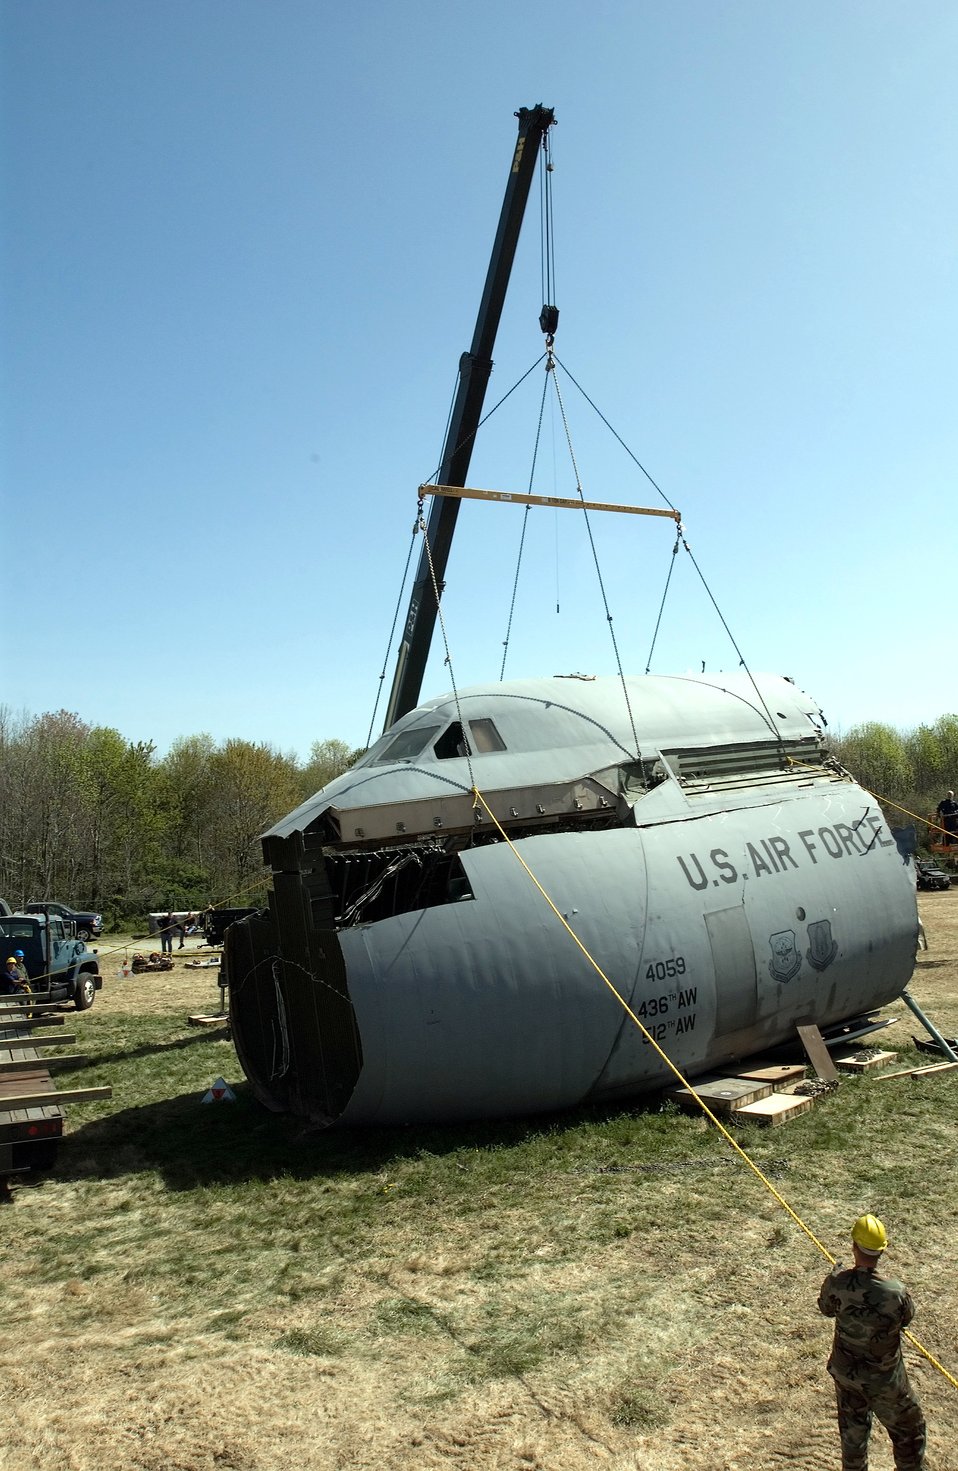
C-5 recovery efforts continue at Dover

The crew compartment of the C-5 Galaxy that crashed at Dover Air Force Base, Del., April 3, is removed from the body of the aircraft by a crane on Thursday, April 20, 2006. The compartment, once it is released by the accident investigation board, is expected to be used as a training simulator.